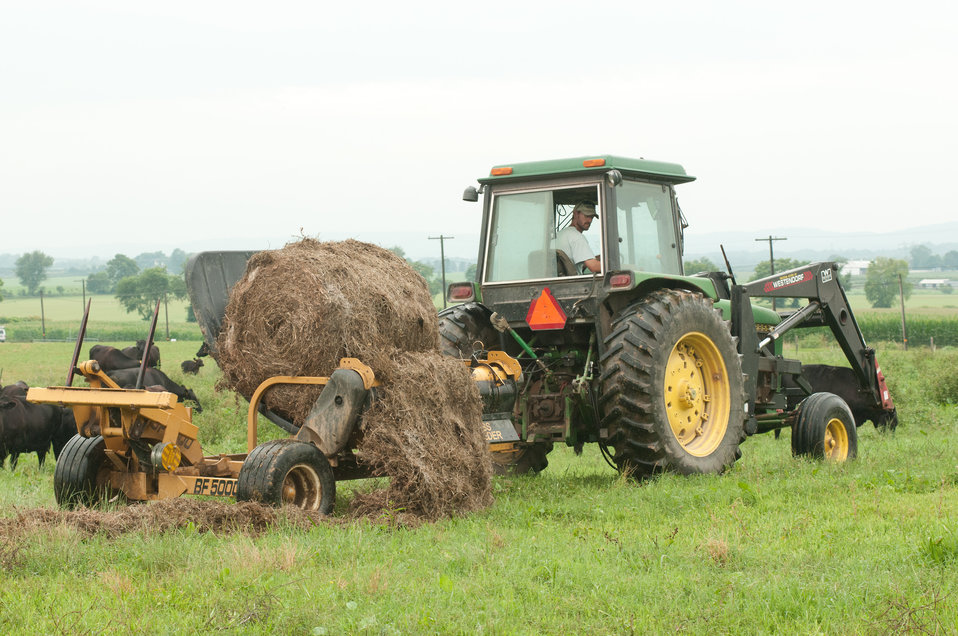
Farm Assistant George Kloph uses a tractor and silage bale spreader to lift and feed the herds of Black Angus cattle at Nick’s Organic Farm, owned by Nick Maravell, in Adamstown, MD on Friday, July 12, 2013. The white plastic wrapped bales of pasture grass and alfalfa have been fermenting for months to create sweet silage that stores well and can be used to feed cattle at varying amount all year long. The fermentation process sweetens the taste and increases the vitamin levels in it. The farm produces Black Angus beef, chicken, turkey, eggs, hay, soybeans, corn, alfalfa, orchard grass, rye; and other crops. The cattle are 100% grass-fed receiving certified organic pasture, certified organic hay (in winter), water and mineral salts mixed with sea kelp. The cattle are not fed hormones, antibiotics or animal products. Poultry feed from grain is ground from organic grain. The poultry also graze on organic pastures. The farm has conducted on-farm research with federal, state and non-profit agencies to refine organic practices. An organization such as the U.S. Department of Agriculture (USDA) Agricultural Research Service (ARS) center in Beltsville has been able to conduct research to improve organic crops and to breed and manage the cattle so that they have.